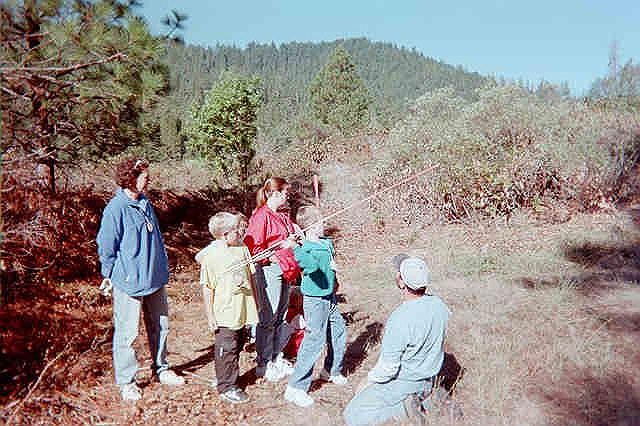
Public Lands Day atlatl demonstation by Dave Mathweg.